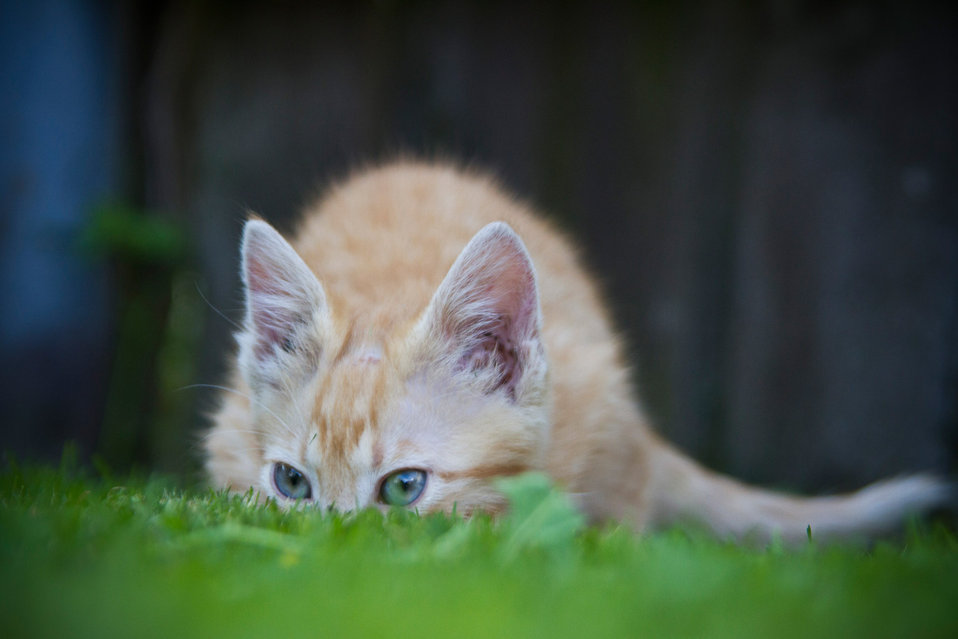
Cat hiding in the grass.